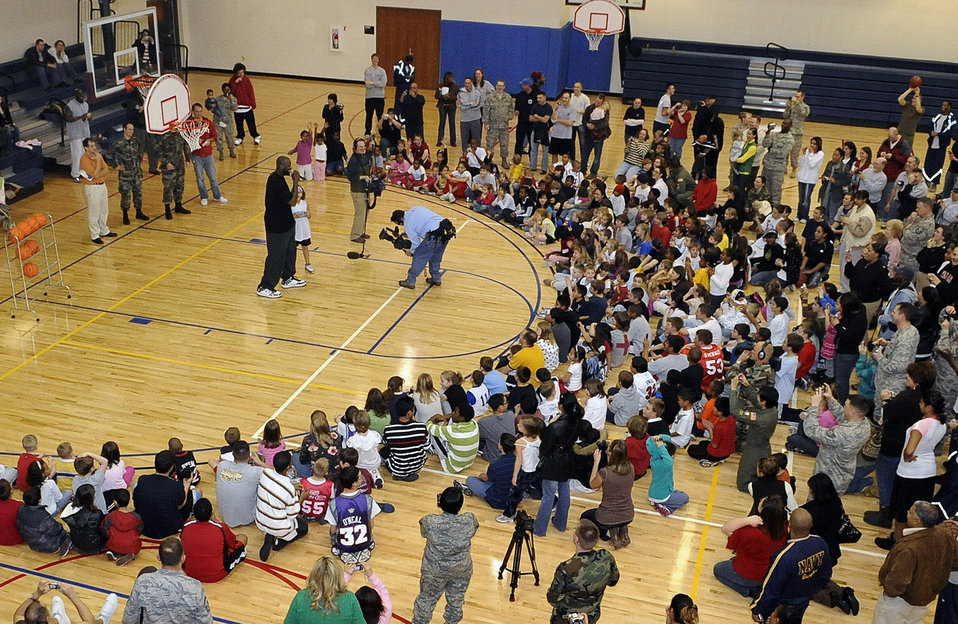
Shaq shares hoops clinic with Buckley children

Shaquille O'Neal of the Phoenix Suns talks to more than 265 military children during a basketball clinic Jan. 14 at Buckley Air Force Base, Colo.